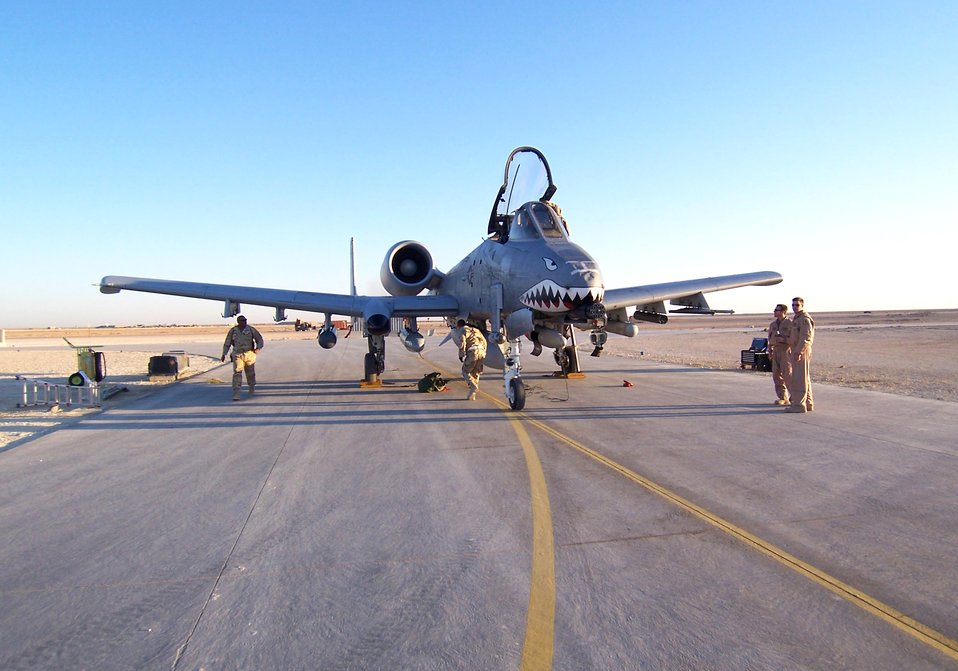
A-10s set to soar in Al Anbar province

Airmen from the 438th Air Expeditionary Group retrieve one of the newly assigned A-10 Thunderbolt II aircraft Jan. 17 at Al Asad Air Base, Iraq. The unit's mission is to provide close-air support for coalition forces in the province.